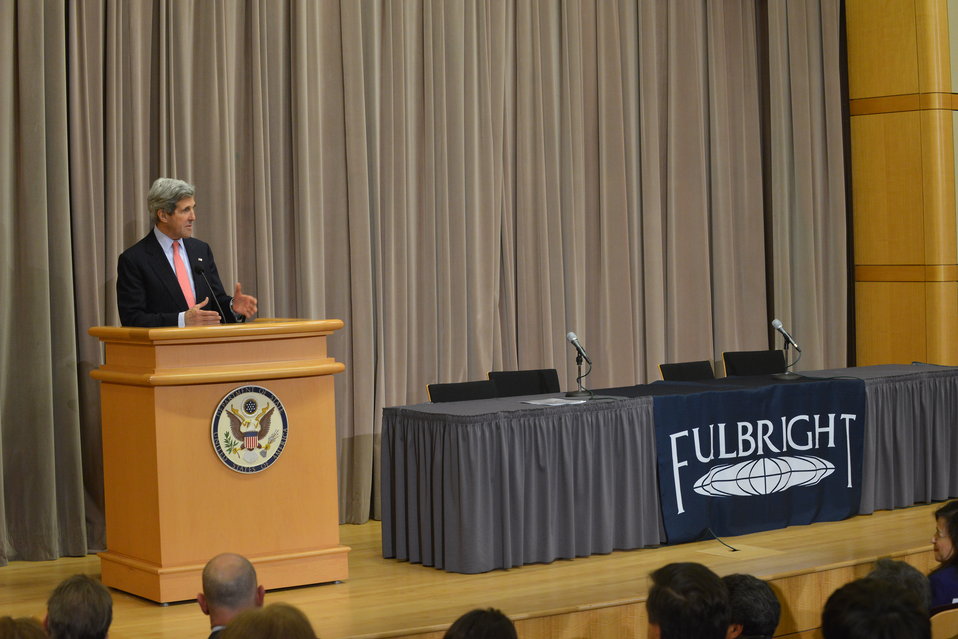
Secretary Kerry Delivers Remarks at the Fulbright Foreign Student Enrichment Seminar

U.S. Secretary of State John Kerry delivers remarks at the Fulbright Foreign Student Enrichment Seminar at the U.S. Department of State in Washington, D.C., on March 15, 2013.